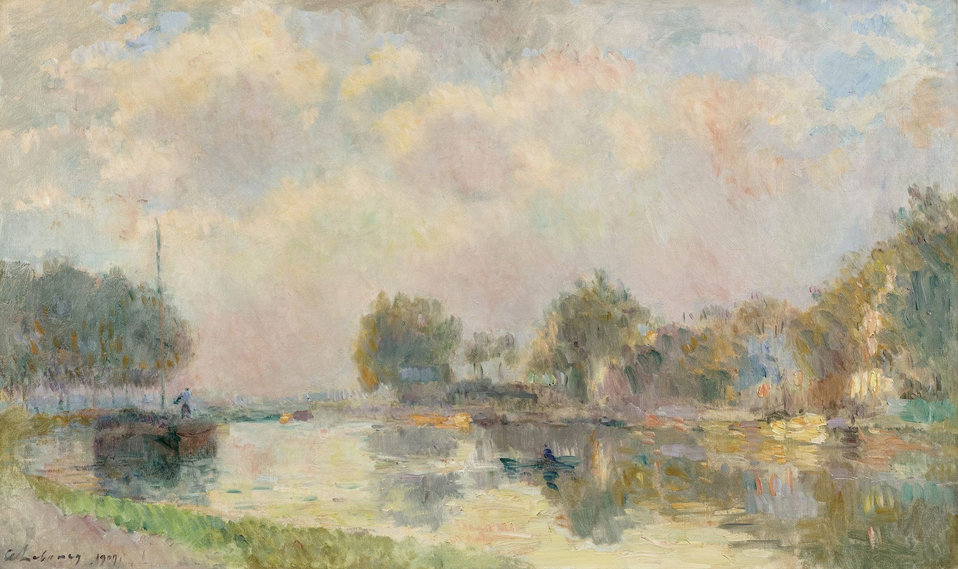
Am Flussufer. Öl auf Leinwand. Unten links signiert und datiert: Lebourg 1909. 46 x 76,5 cm.